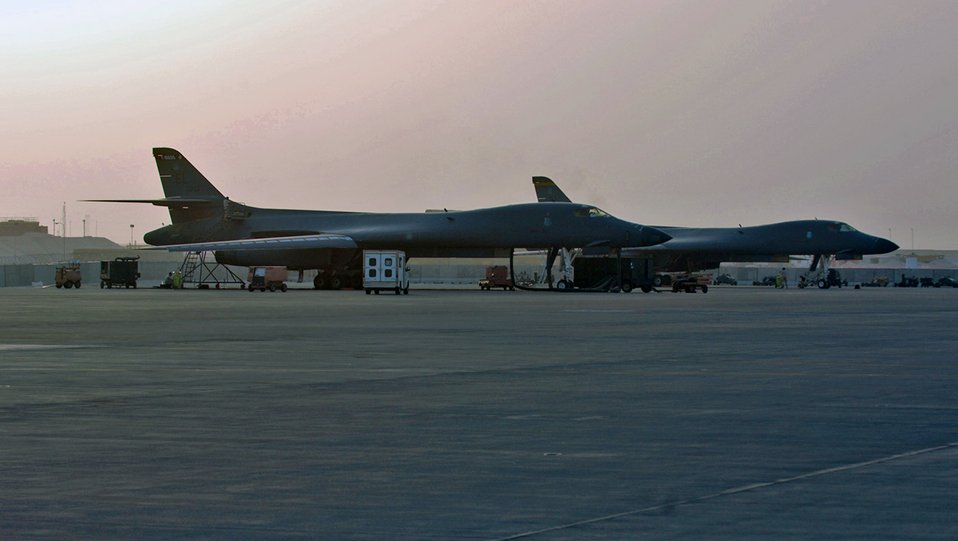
Airpower Summary for July 9, 2007

The sun sets as B-1B Lancers stand ready on a flightline at a forward deployed location in Southwest Asia. The B-1 supports both Operation Enduring Freedom and Operation Iraqi Freedom with close-air support.